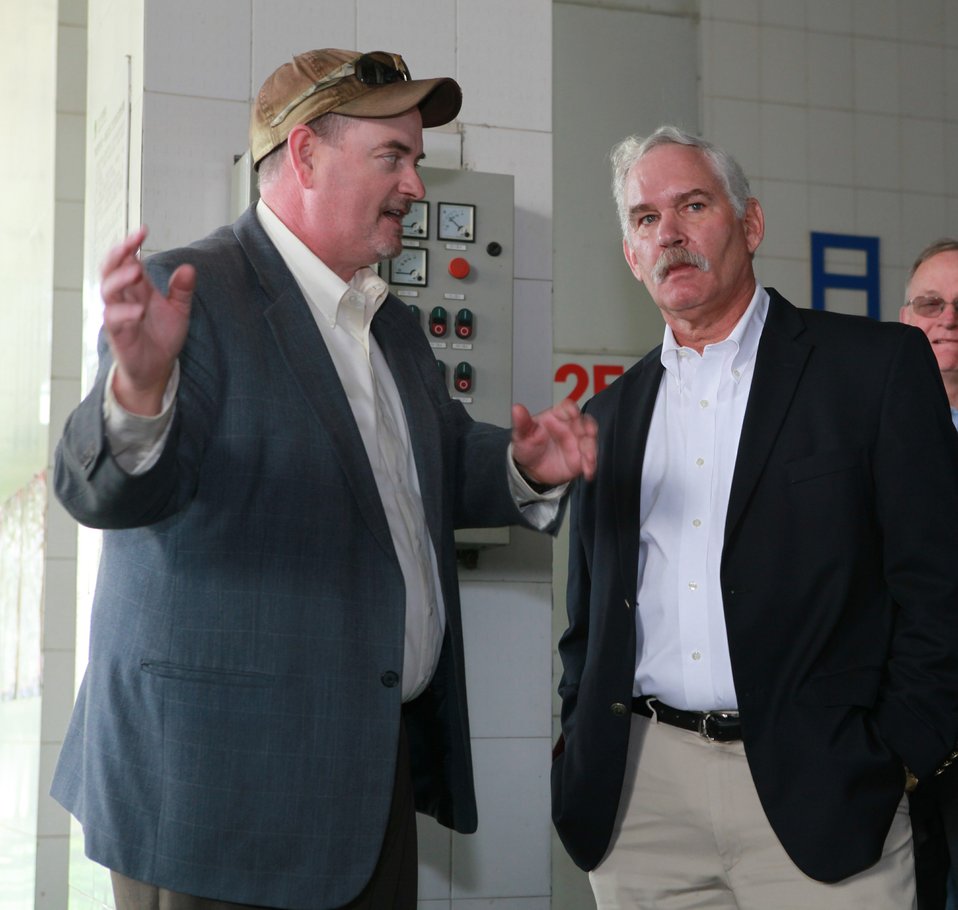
Shenyang, China Agriculttural Trade Office (ATO) Director Philip Jarnell speaks to U.S. Department of Agriculture (USDA) Farm and Foreign Agricultural Services (FFAS) Under Secretary Michael Scuse in China on May 5, 2014. Scuse lead an agricultural trade mission to China. The mission is to further National Export Initiative goals in China and is part of President Obama’s Made in Rural America export and investment initiative, designed to help rural businesses and leaders take advantage of new investment opportunities and access new customers and markets abroad.